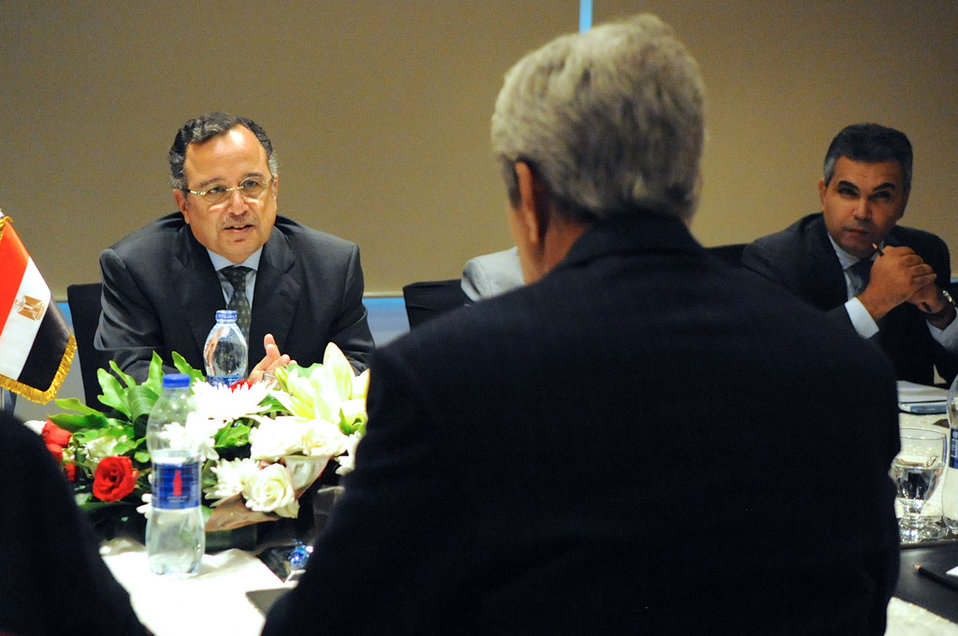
Secretary Kerry meets with Egyptian Foreign Minister Fahmy

Egyptian Foreign Minister Nabil Fahmy speaks with U.S. Secretary of State John Kerry at the outset of a meeting in Cairo, Egypt, on November 3, 2013.